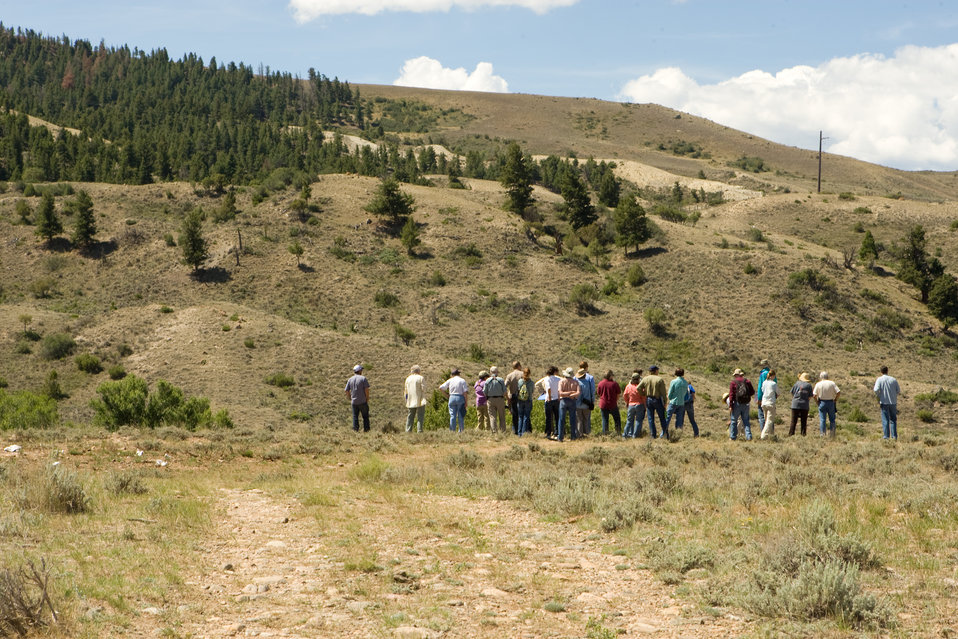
Colorado Rare Plant Conservation Initiative

The Colorado Rare Plant Conservation Initiative (RPCI) is a partnership of 23 statewide and regional agencies, private organizations, and academic institutions working to conserve 121 rare plants in Colorado. As part of these efforts the group developed the Colorado Rare Plant Conservation Strategy, developed Best Management Practices to reduce energy development impacts, addressed climate change, and developed focused strategies for the conservation of individual species at eight priority landscapes. The group has also worked to coordinate volunteer efforts for plant conservation across the state.